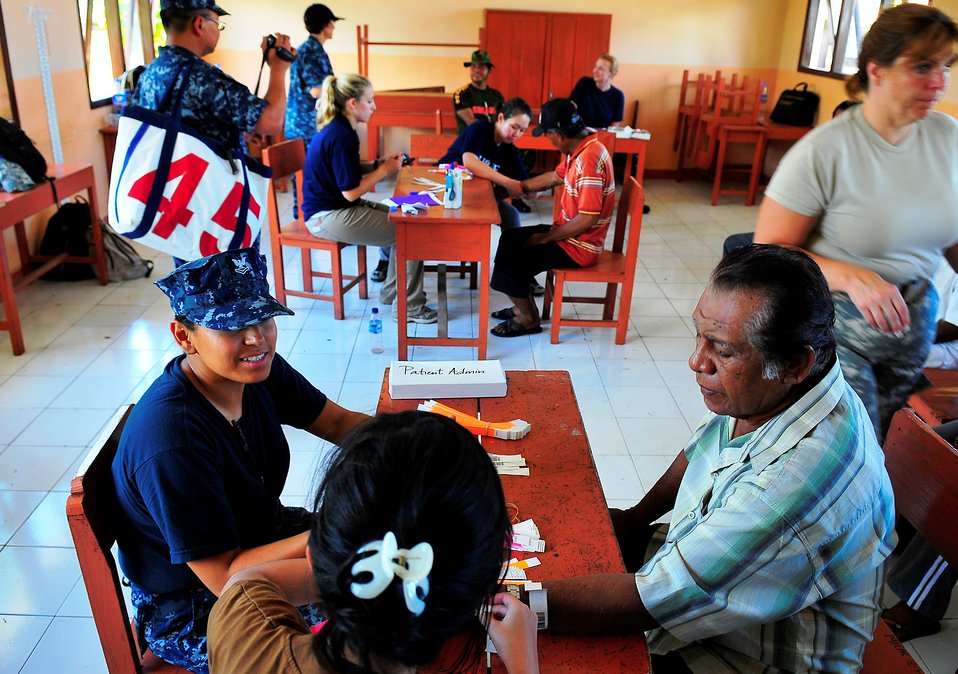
Sailors and non-governmental organization volunteers help local Indonesians with medical assistance at a medical civic action program, conducted at the Negeri school by the Military Sealift Command hospital ship USNS Mercy (T-AH 19) during its visit to Tobelo, Indonesia, on July 14, 2010. Mercy is deployed for Pacific Partnership 2010, the fifth in a series of annual U.S. Pacific Fleet endeavors conducted in Indonesia as a disaster relief exercise aimed at strengthening regional partnerships.